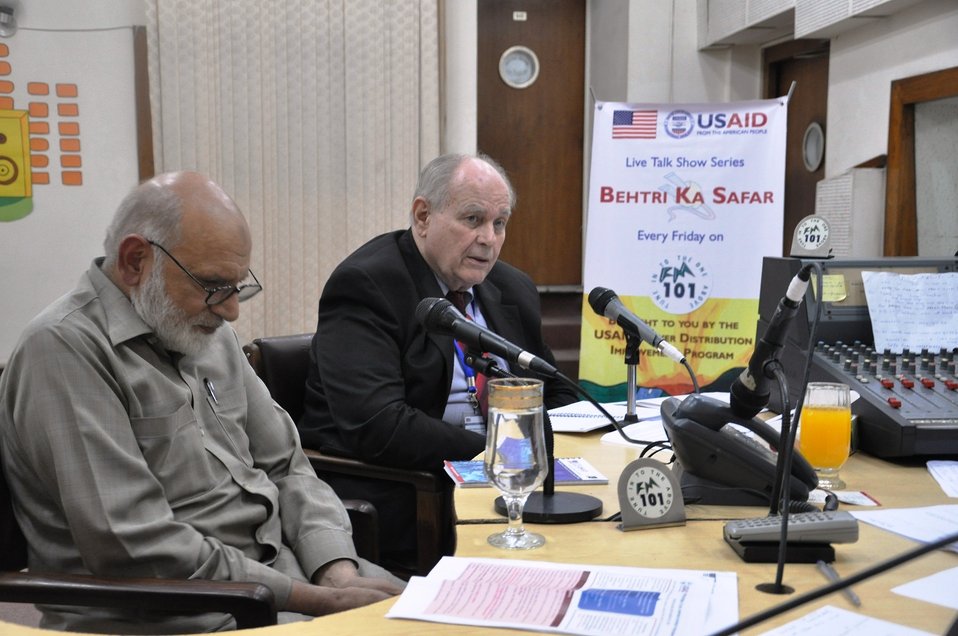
23 Sept, 2011 - Live Talk Show Series Every Friday 'Behtari Ka Safar' on FM 101

USAID's Power Distribution Program held a set of training workshops on September 7-8th aimed at improving the commercial procedures and efficiency of power distribution companies (DISCOs). The topics under discussion included the 'Meter Reading Process' and 'Meter Change Process' and finding ways to bring improvements to DISCOs' existing procedures by streamlining the flow of documents and eliminating redundancies without compromising transparency and accountability.
Power Distribution Program's Outreach program ‘Behtri Ka Safar’ (A Journey of Improvement) was launched on the FM 101 radio station on September 23, 2011. The COP Dick Dumford and DCOP Saleem Arif went on air in the kick off broadcast of the program. The program is part of communications campaign and aims at creating awareness among the consumers about the role of Power Distribution Program in improving the DISCO’s performance. The program will have 13 weekly episodes in which DISCO’s representatives will participate and clarify their role and agenda as an effort to reach out to their consumers.